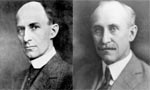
Wilbur and Orville Wright

Early Years -- Wilbur and Orville Wright